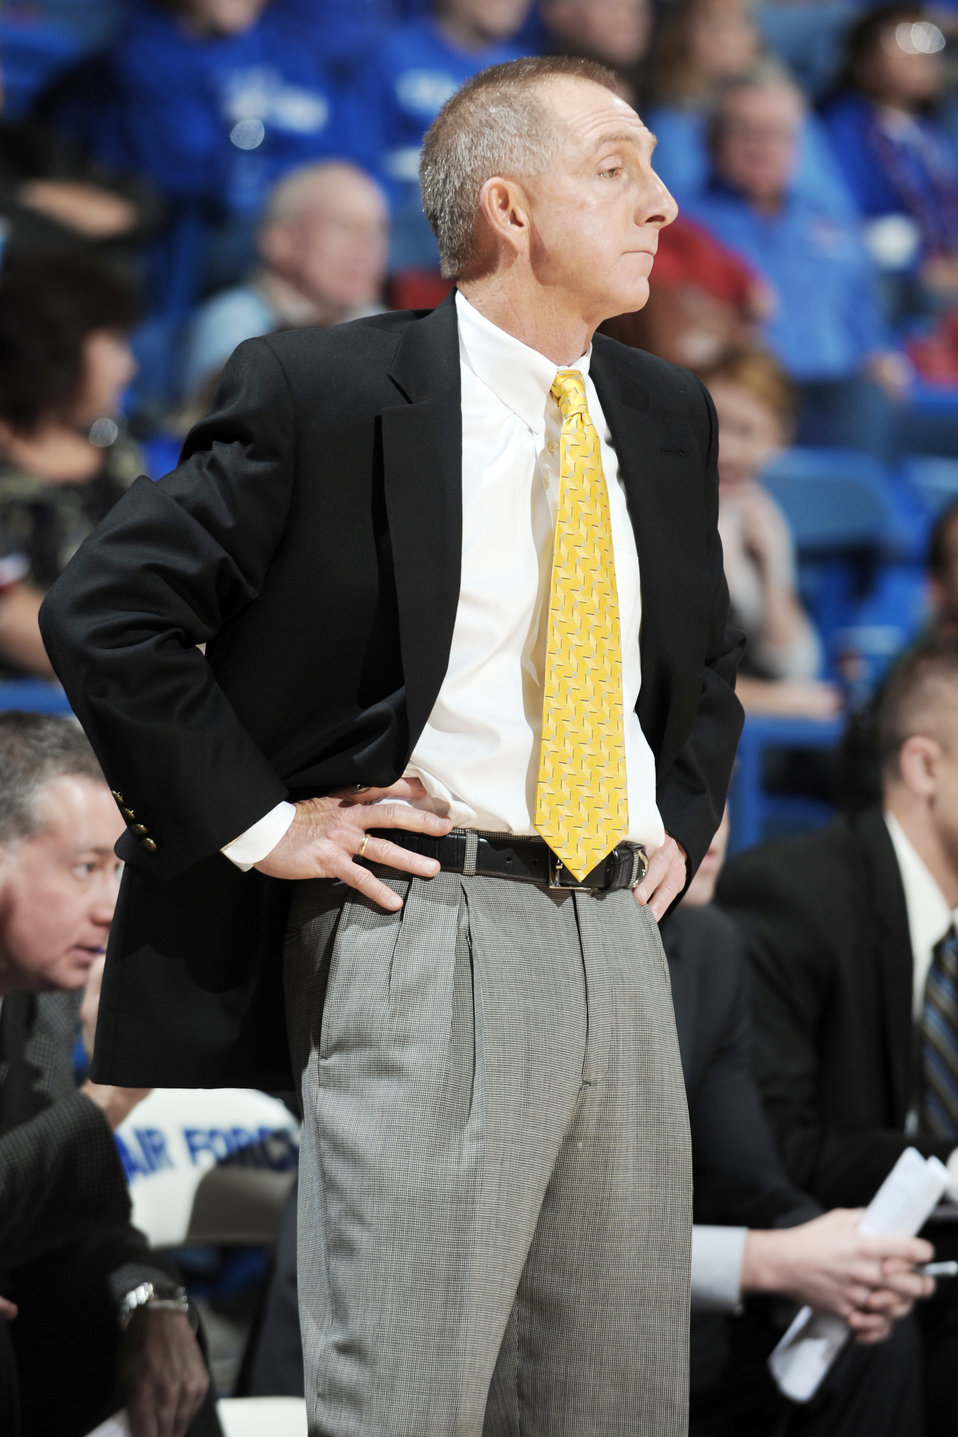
Falcons vs Northern Arizona

U. S. Air Force Academy head coach Jeff Reynolds watches the action during the Falcons' game against Northern Arizona at the Academy's Clune Arena Dec. 19, 2009. Air Force lost the game 60-52.